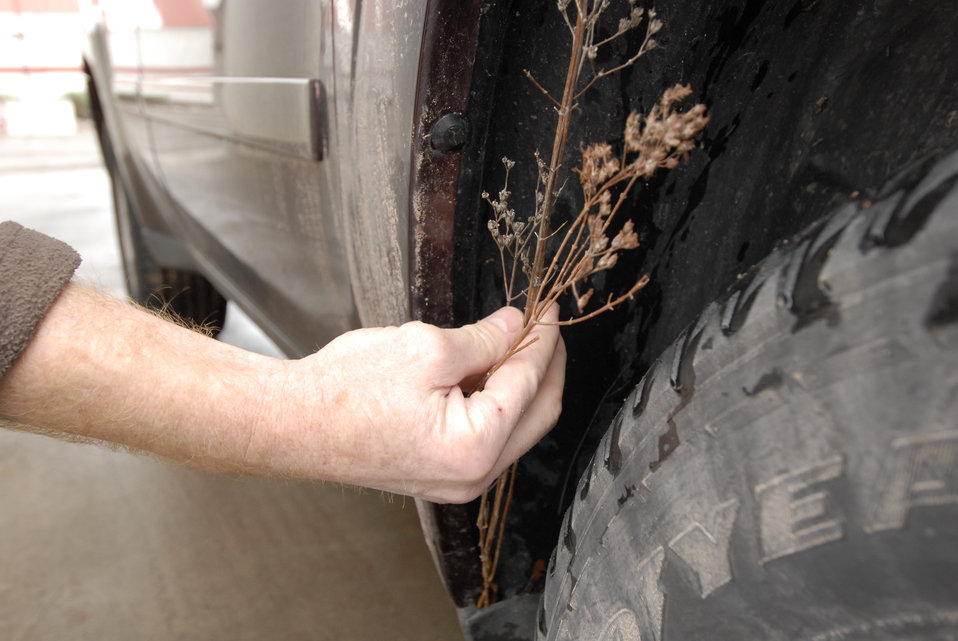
The U.S. Department of Agriculture’s (USDA) Forest Service (FS) invasive species program is to reduce, minimize, or eliminate the potential for introduction, establishment, spread, and impact of invasive species across all landscapes and ownerships. Invasive species have been characterized as a “catastrophic wildfire in slow motion.” Thousands of non-native invasive plants, insects, fish, mollusks, crustaceans, pathogens, mammals, birds, reptiles, and amphibians have infested hundreds of millions of acres of land and water across the Nation, causing massive disruptions in ecosystem function, reducing biodiversity, and degrading ecosystem health in our Nation’s forests, prairies, mountains, wetlands, rivers, and oceans. Invasive organisms affect the health of not only the Nation’s forests and rangelands but also of wildlife, livestock, fish, and humans. A washing station has been set up to allow visitors at the National Bison Range Wildlife Refuge in Montana to clean the underside and wheel-wells of their vehicles to prevent the spread of non-native weeds and grasses on November 17, 2007.